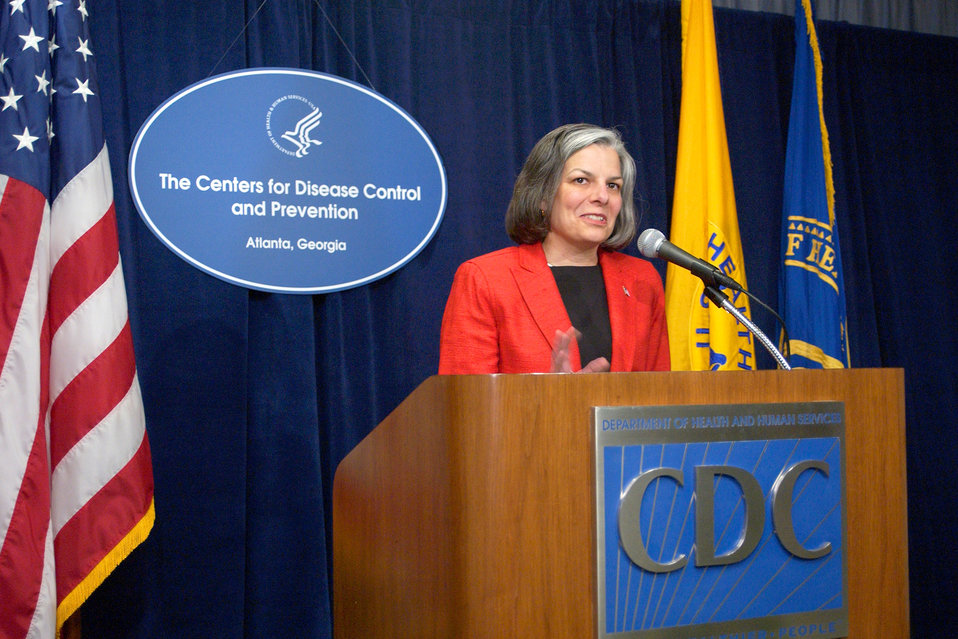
Dr. Julie Gerberding answers questions at a press conference held at CDC in April of 2003.